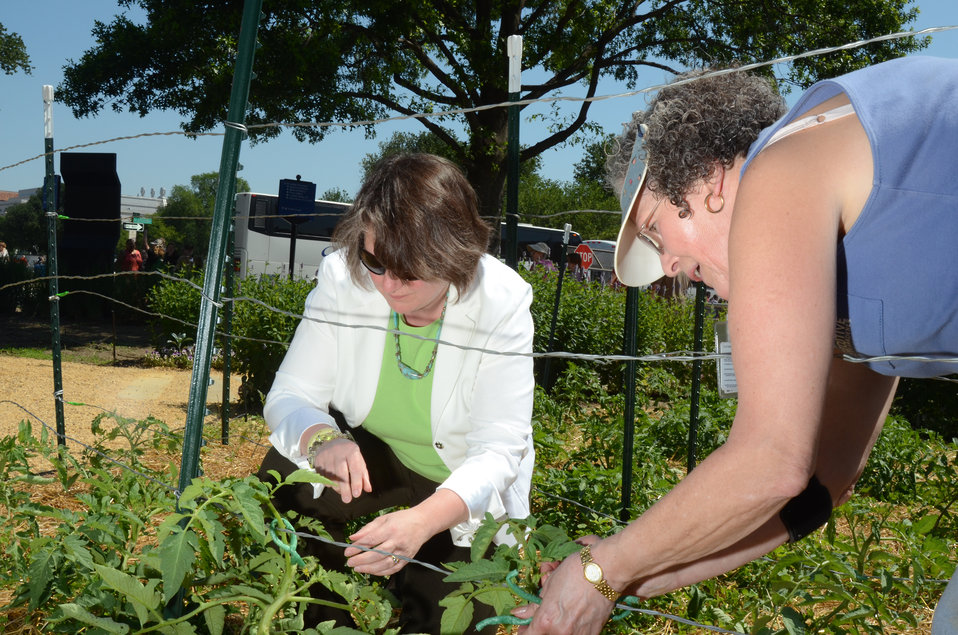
Agriculture Deputy Kathleen Merrigan joins a People’s Garden volunteer and stakes Abe Lincoln tomatoes at the Feds Feed Families and Farmers Market at the U.S. Department of Agriculture(USDA) in Washington, D.C. on Friday, June 8, 2012. Fresh produce donations from gardens are an important part of USDA’s Feds Feed Families efforts.